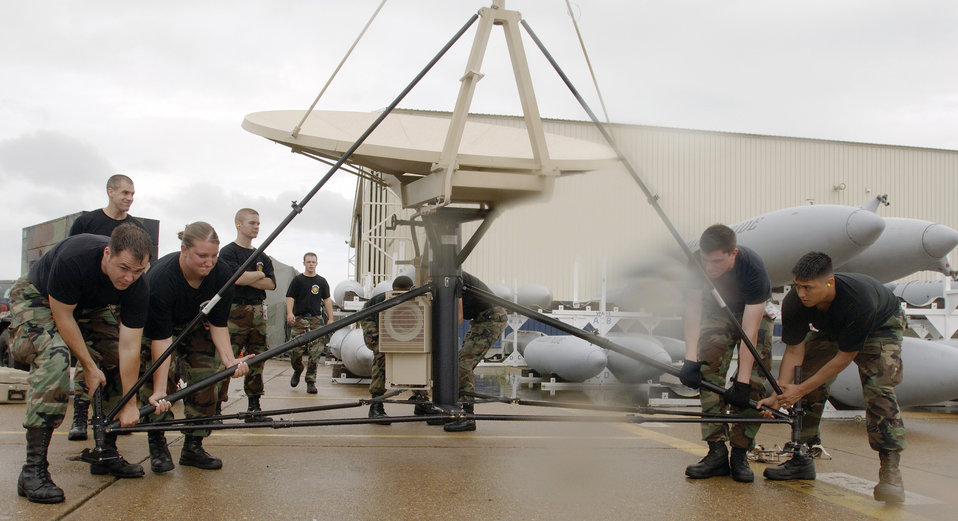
Lift and move

Members of the 1st Communications Squadron Theater Deployment Communications team at Langley Air Force Base, Va., lift and move a USC-60 satellite during a rain storm at Naval Air Station Oceana. The squadron is supporting the F-22 Raptors deployed to NAS Oceana during flightline construction at Langley.